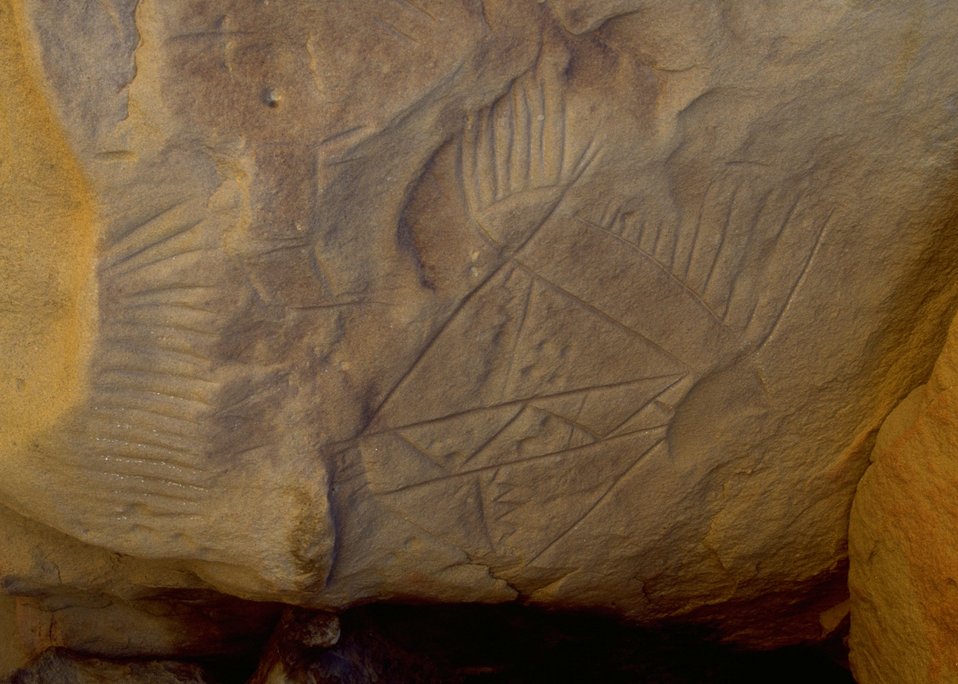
White Mountain Petroglyphs, Rock Springs Field Office.